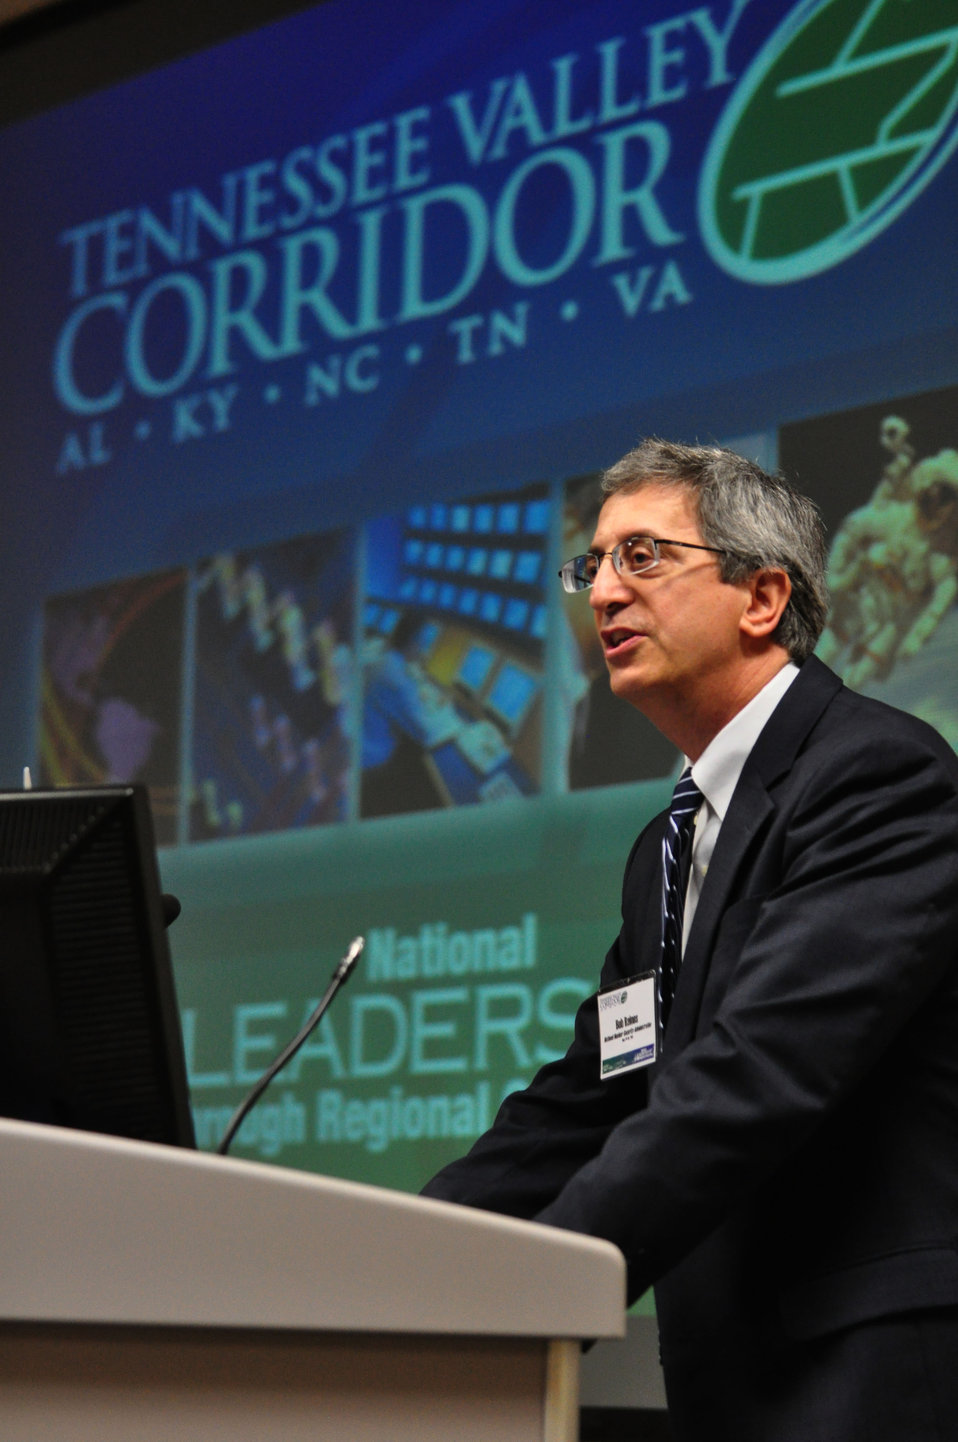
Bob Raines NNSA Tennessee Valley Corridor Summit Oak Ridge

13-062 DOE photo Lynn Freeny 5-29-2013 Oak Ridge Tennessee